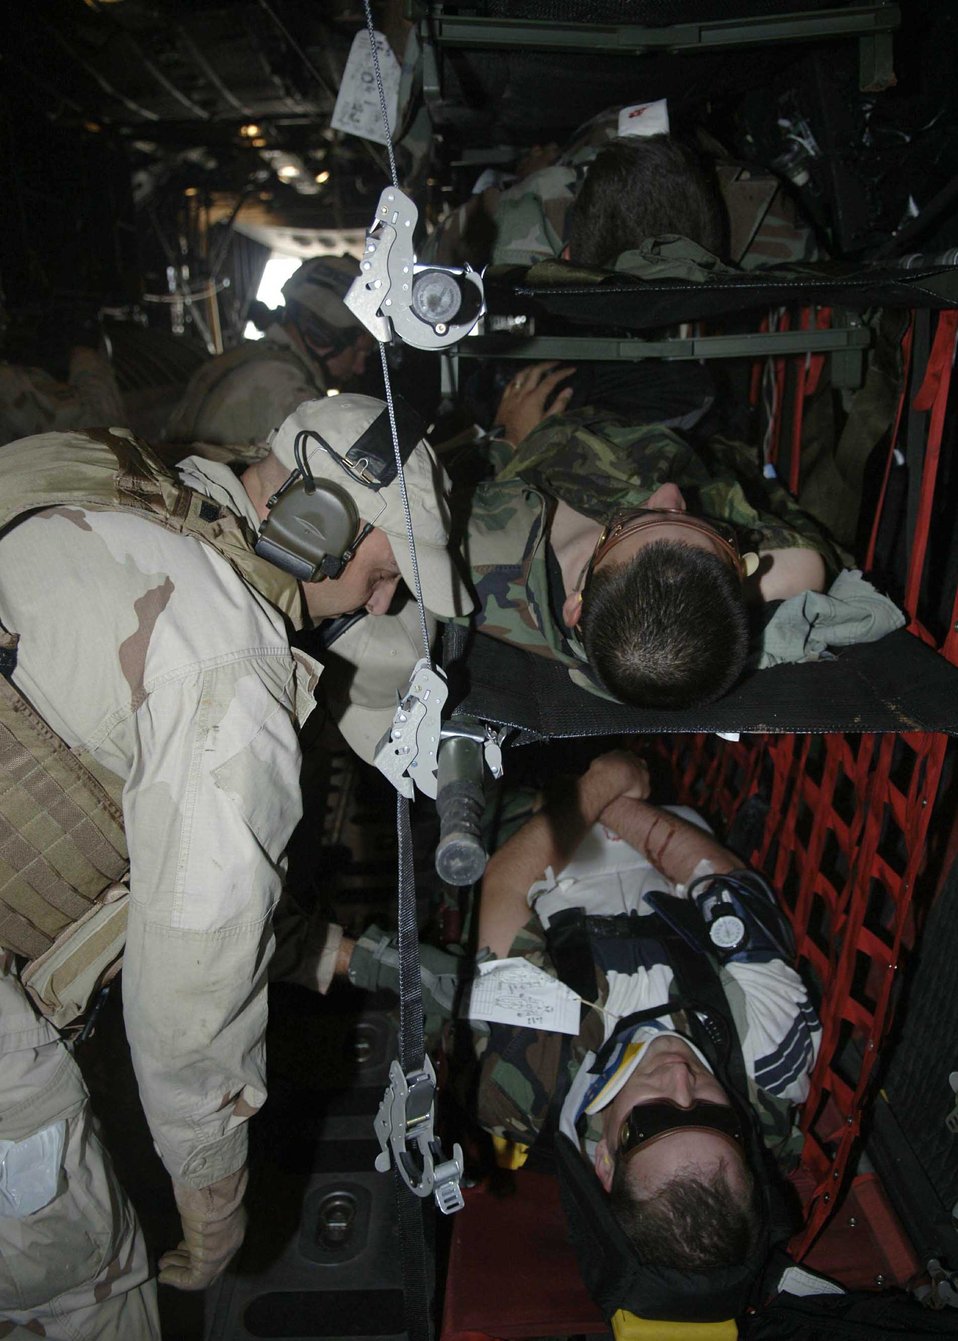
Angel Thunder

Master Sergeant Michael Arena secures simulated mass casualty survivors July 27 into a HC-130 as part of exercise Angel Thunder. They were then flown to Davis-Monthan Air Force Base to a simulated level 2/3 medical facility. This part of exercise Angel Thunder involved the 48th, 58th, 66th, 79th and 305th Rescue Squadrons as well as air support from the 358th Fighter Squadron. Sergeant Arena is with the 48th Rescue Squadron.